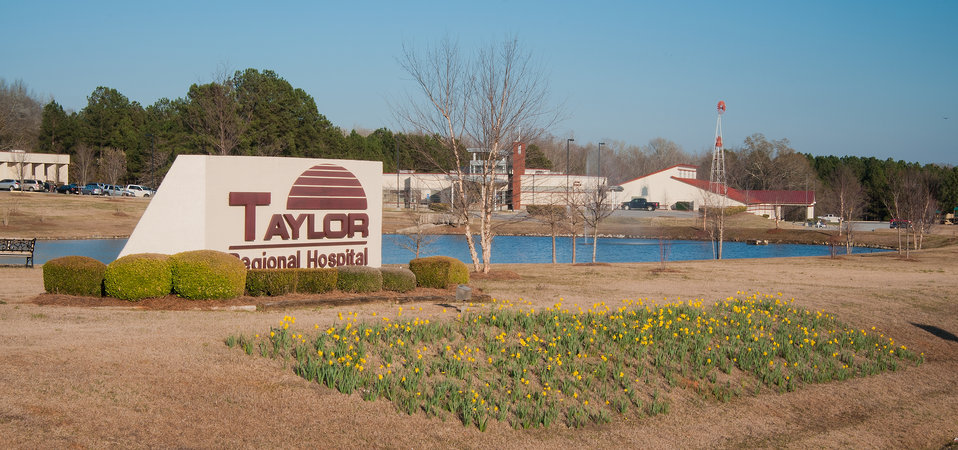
The R.J. Taylor Memorial Hospital on a sunny day in Hawkinsville, Pulaski County, GA on Mar. 6, 2013. This is the hospital’s main location and the facility is a licensed private, not-for-profit acute care facility providing emergency, specialty and primary health care. There is a second hospital located in Bleckly County, GA which provides services to residents in these two very rural counties of Georgia. These counties have a high percentage of people living below the state average poverty level and are considered the most economically distressed. The hospital has purchased an Electronic Medical Records System under an incentive program by the Federal government through the U.S. Department of Agriculture (USDA) Rural Development (RD) Community Facilities Loan (CF) that ensures fiscally responsive access to superior quality integrated health care.